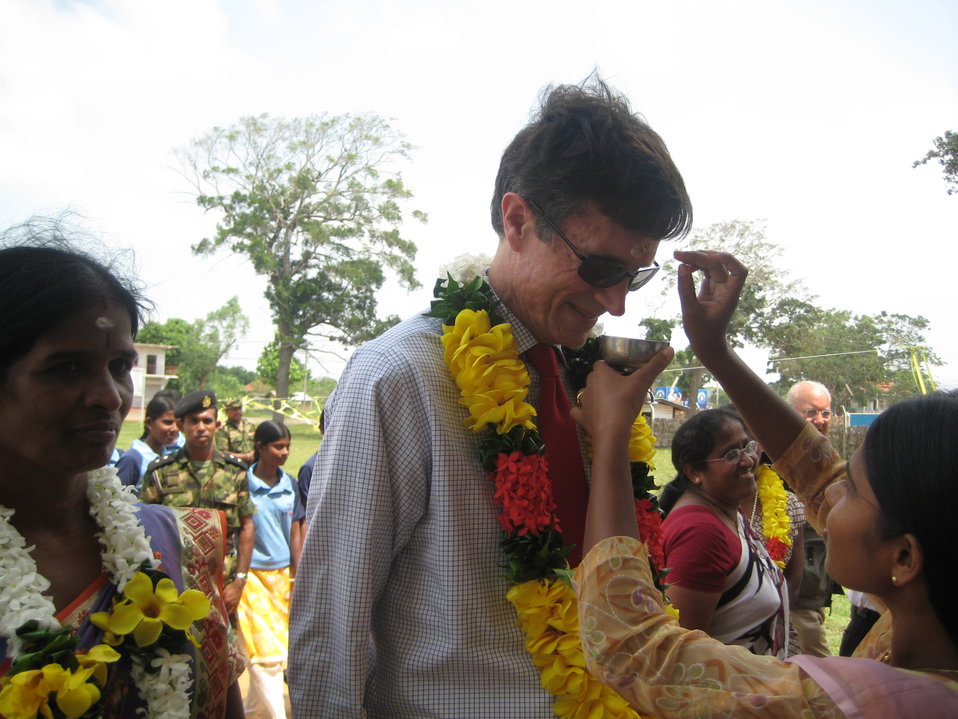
Assistant Secretary Blake Meets With Members of Civil Society

Assistant Secretary of State for South and Central Asian Affairs Robert O. Blake, former U.S. Ambassador to Sri Lanka, meets with members of civil society in Kilinochchi, Sri Lanka, on May 3, 2011.